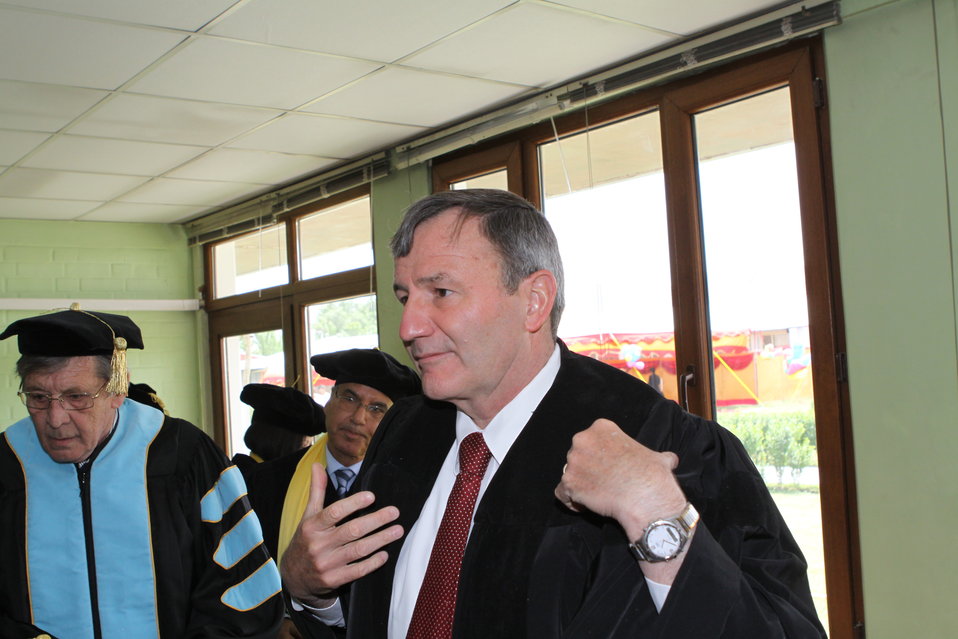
100526 AUAF Graduation 046